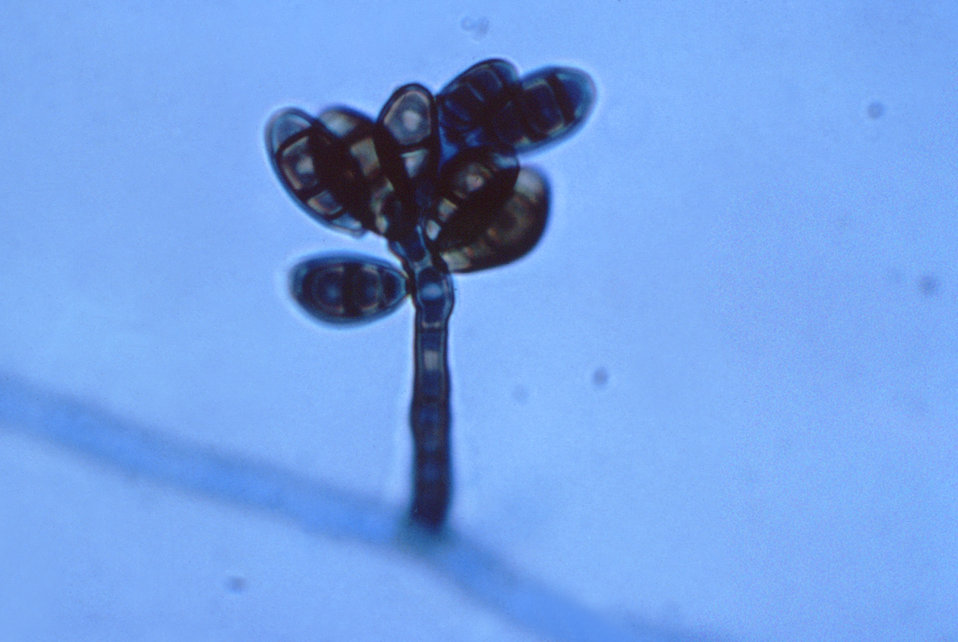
This photomicrograph shows a conidiophore of the fungus Curvularia geniculata.